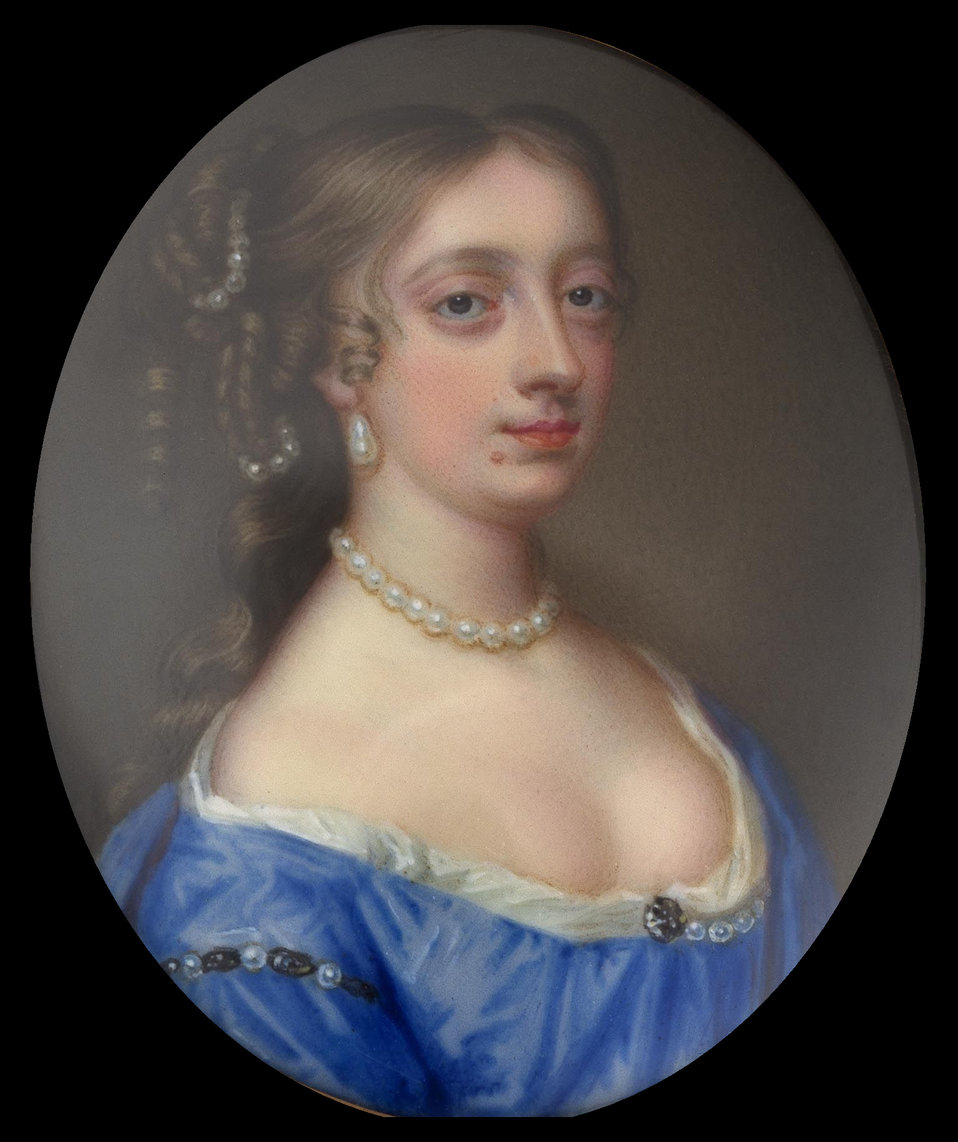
A Young Lady called Henrietta Boyle by Christian Friedrich Zincke